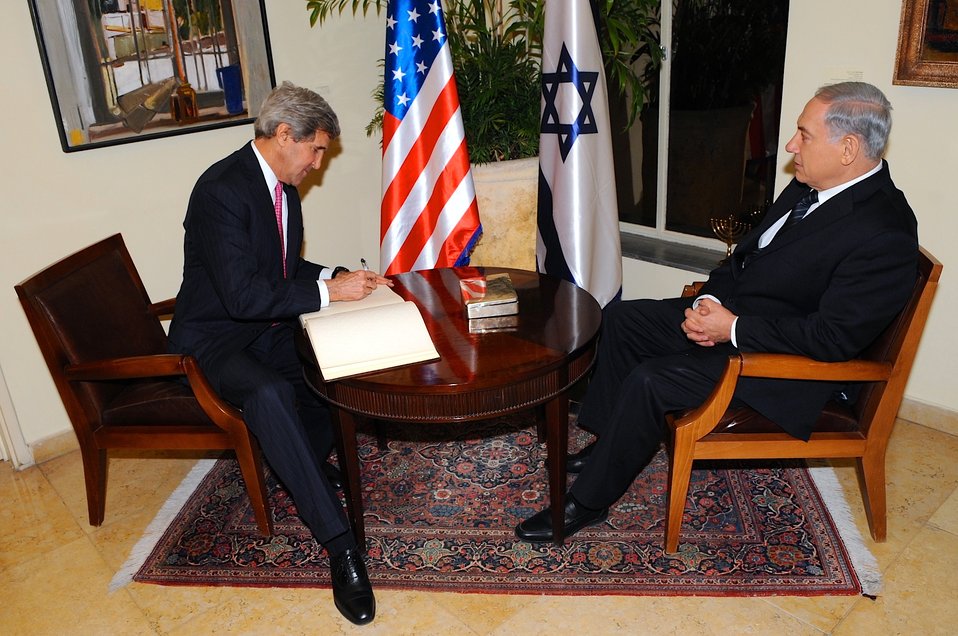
Secretary Kerry Signs Guest Book in Jerusalem

U.S. Secretary of State John Kerry signs the guest book at the government residence of Israeli Prime Minister Benjamin Netanyahu in Jerusalem before a dinner meeting focused on Middle East peace on January 4, 2014.